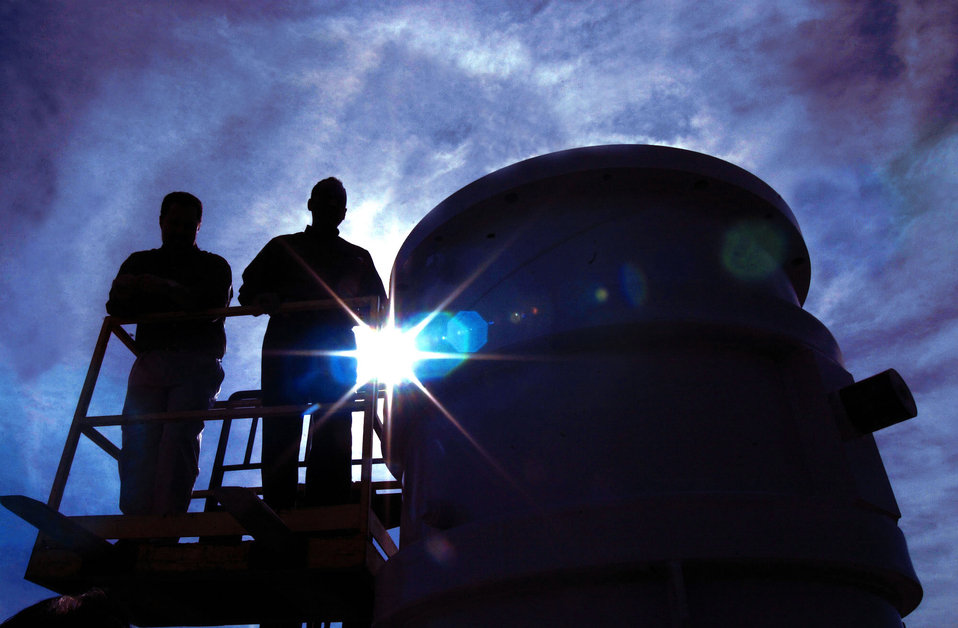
Lead Cast at Bull Run Steel Works Clinton

01-292 DOE photo by Lynn Freeny
Lead Cast at Bull Run Steel Works Clinton TEnnessee 2001